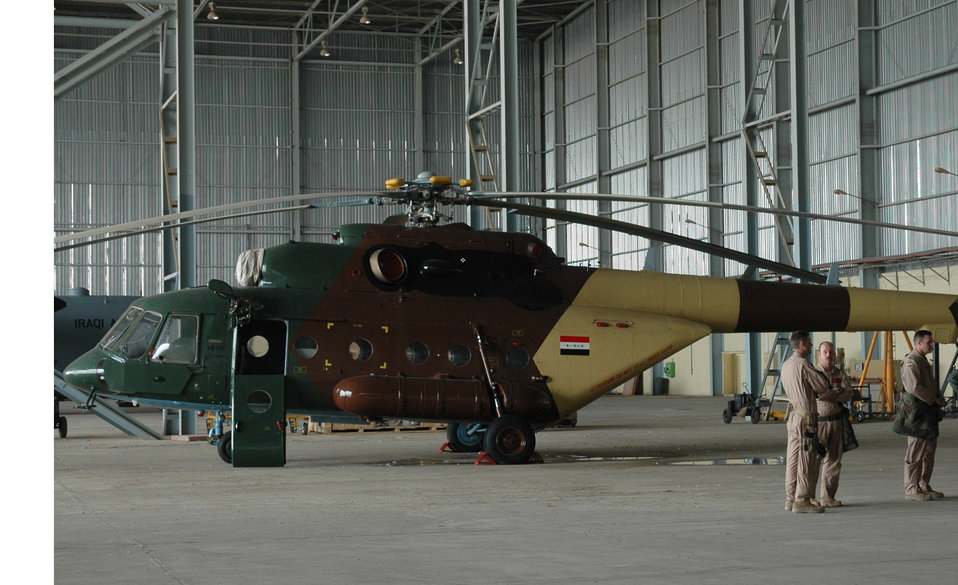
Iraqi air force takes flight with help from U.S. Airmen

Military transition team members gather next to a newly refurbished helicopter at New Al Muthana in Baghdad, Iraq. The helicopters will be flown out of Taji Air Base.